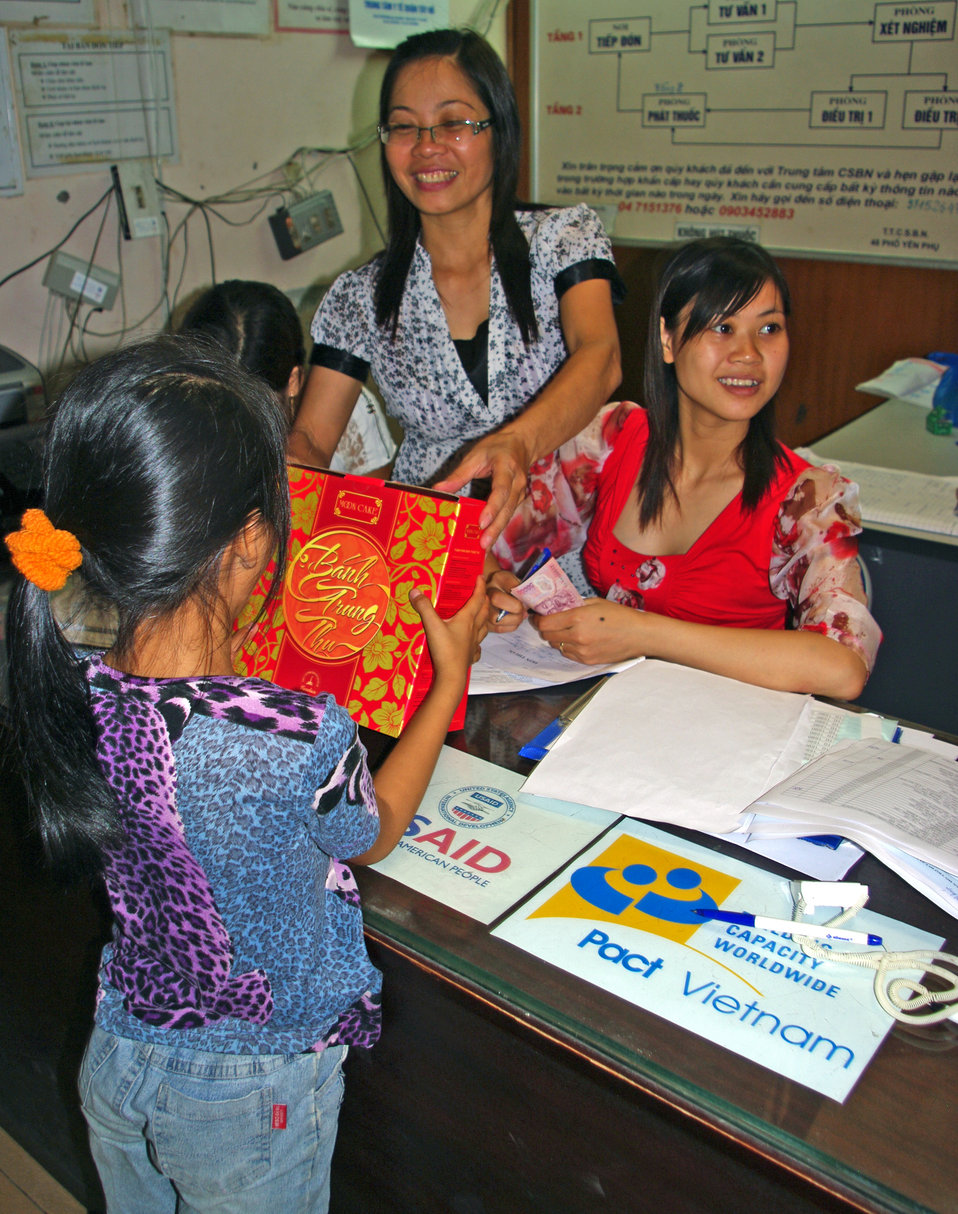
Oprhans and vulnerable children receive free medical check-ups in Hanoi